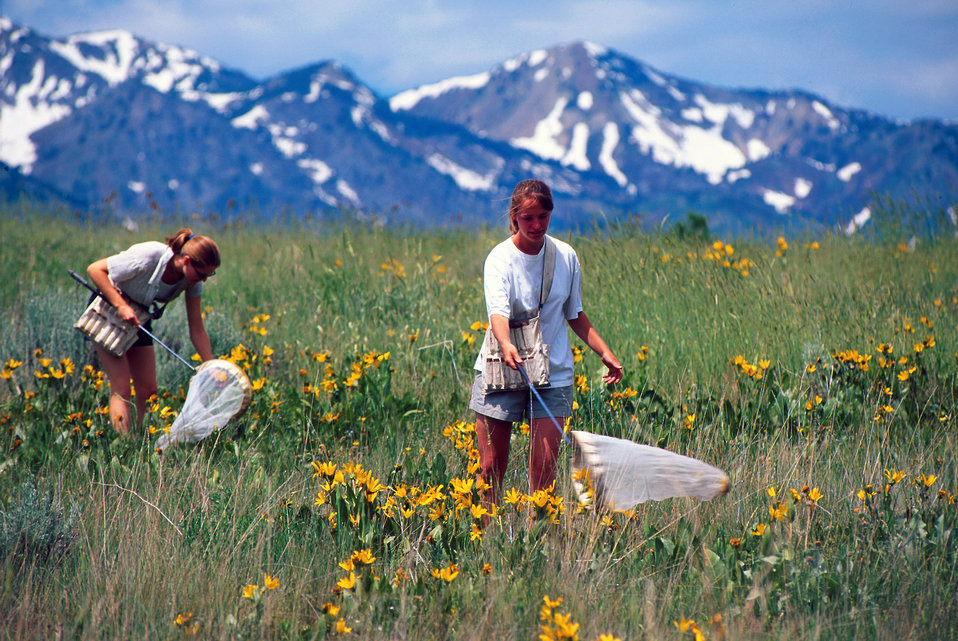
U.S. Department of Agriculture (USDA) Agricultural Research Service (ARS) technicians Rebekah Andrus and Olivia Messinger are netting insects in a field near the Wellsville Mountains, UT.